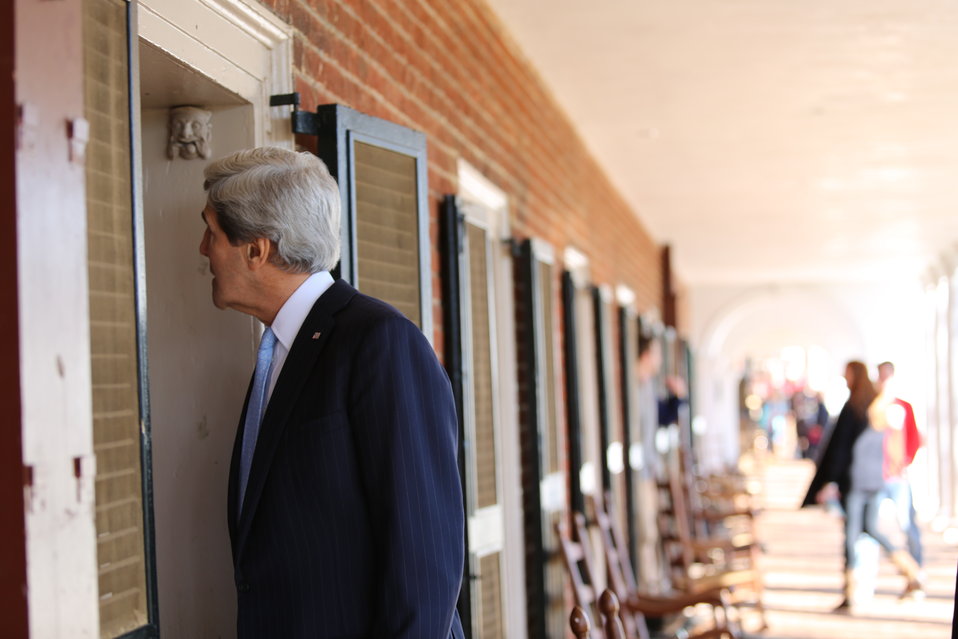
Secretary Kerry Meets With UVA Students

U.S. Secretary of State John Kerry meets with students at the University of Virginia in Charlottesville, Virginia, February 20, 2013.